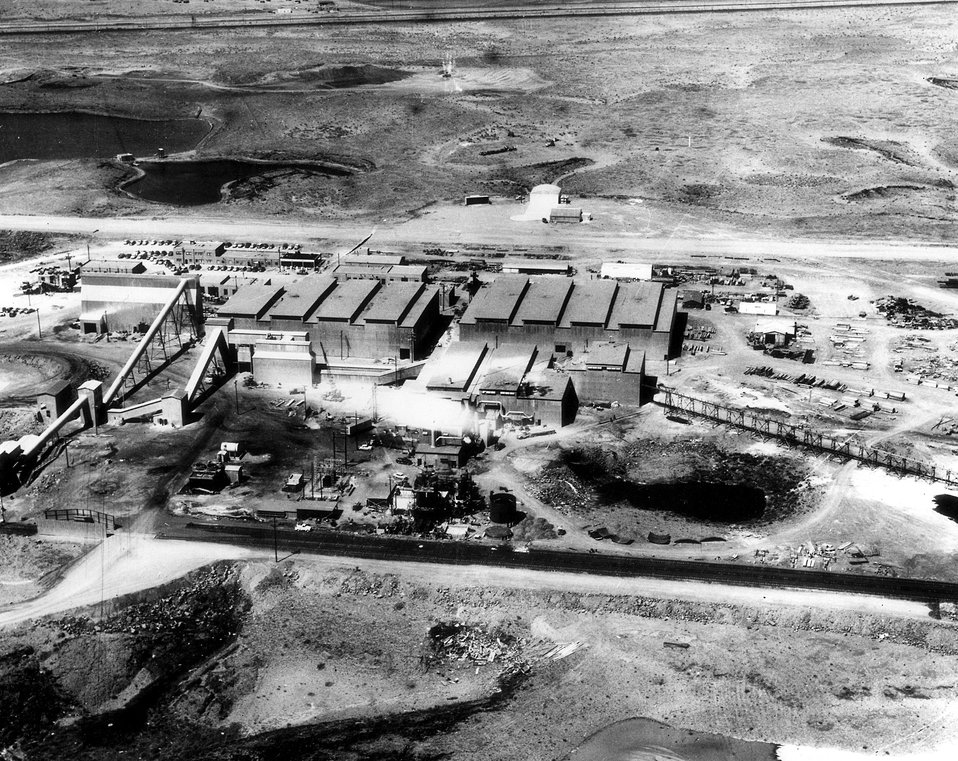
Uranium processing mill owned and operated by the Anaconda Company at Bluewater, near Grants, New Mexico. c. 1957